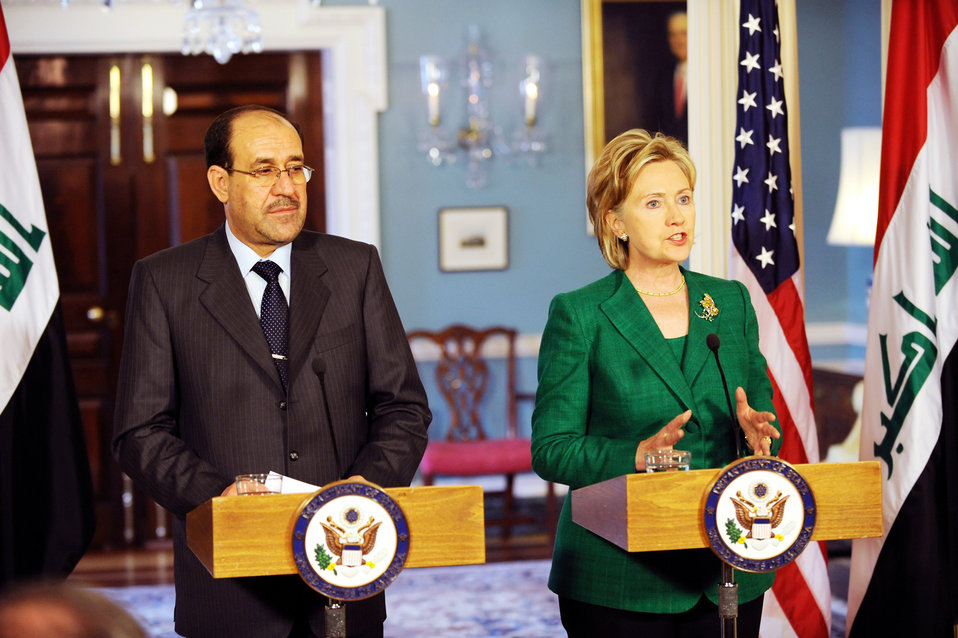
Secretary Clinton Holds Bilarteral Meeting with Iraqi Prime Minister

U.S. Secretary of State Hillary Rodham Clinton holds a press availability with His Excellency Nouri al-Maliki, Prime Minister of the Republic of Iraq at the U.S. Department of State in Washington, DC July 24, 2009.